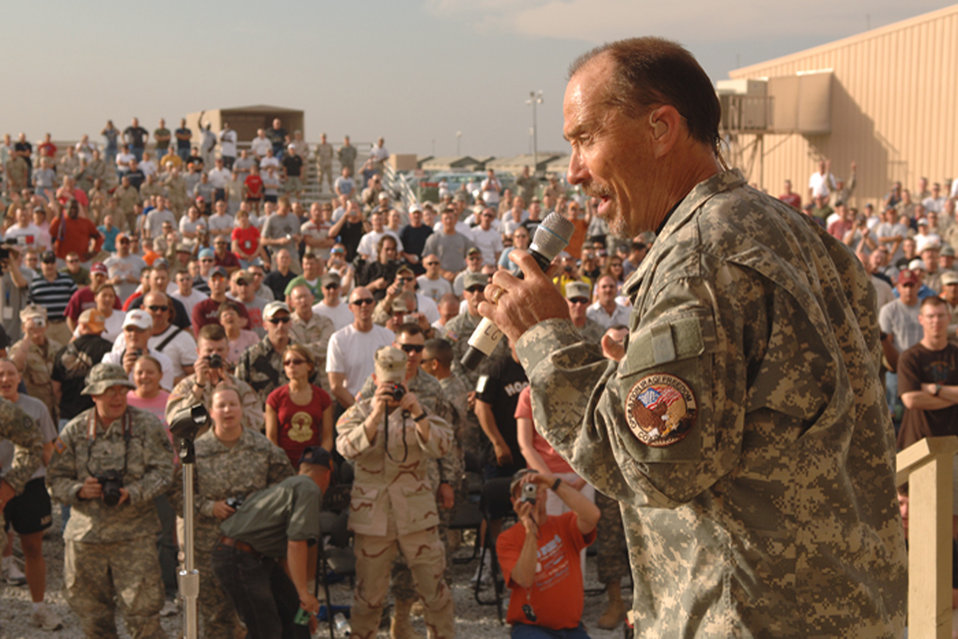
Patriotic World Tour

Lee Greenwood entertains the crowd during the Patriotic World Tour's third performance stop in Southwest Asia. The tour is sponsored by Air Force Reserve Command.